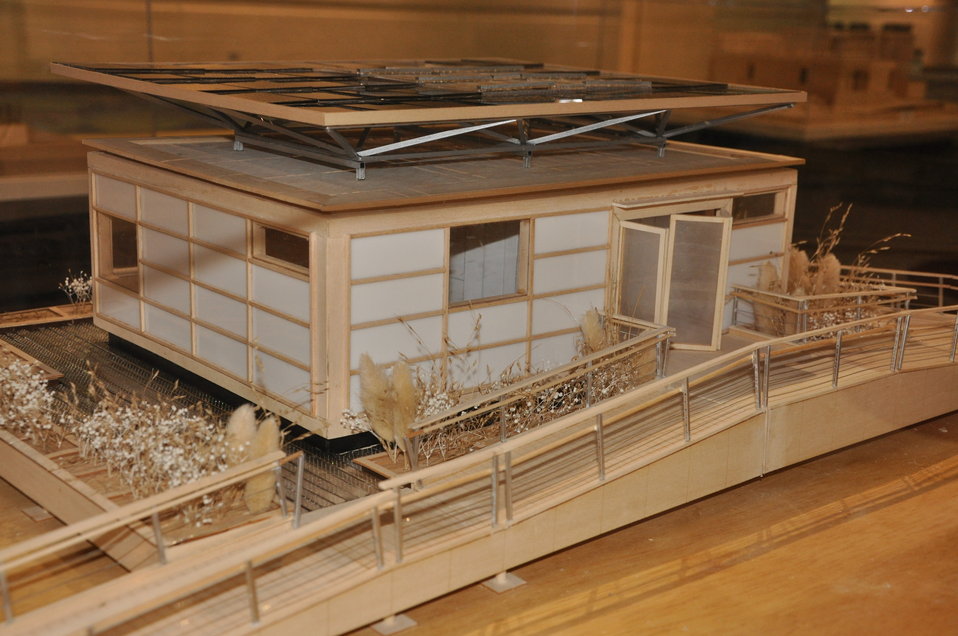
Team New York